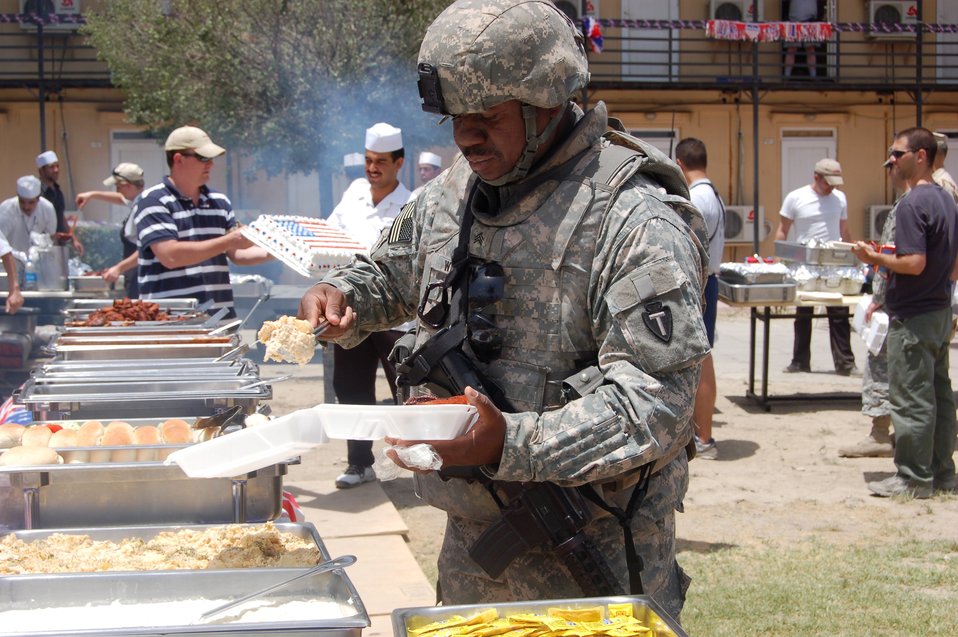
Independence Day in Afghanistan

Army Sgt. Robert Wilson, Combined Security Transition
Command-Afghanistan, fills a plate with barbecue at Camp Eggers'
Independence Day celebration in Kabul, Afghanistan. Servicemembers
participated in a myriad of traditional Fourth of July events including
a basketball tournament, horse shoes and a pie-eating contest.